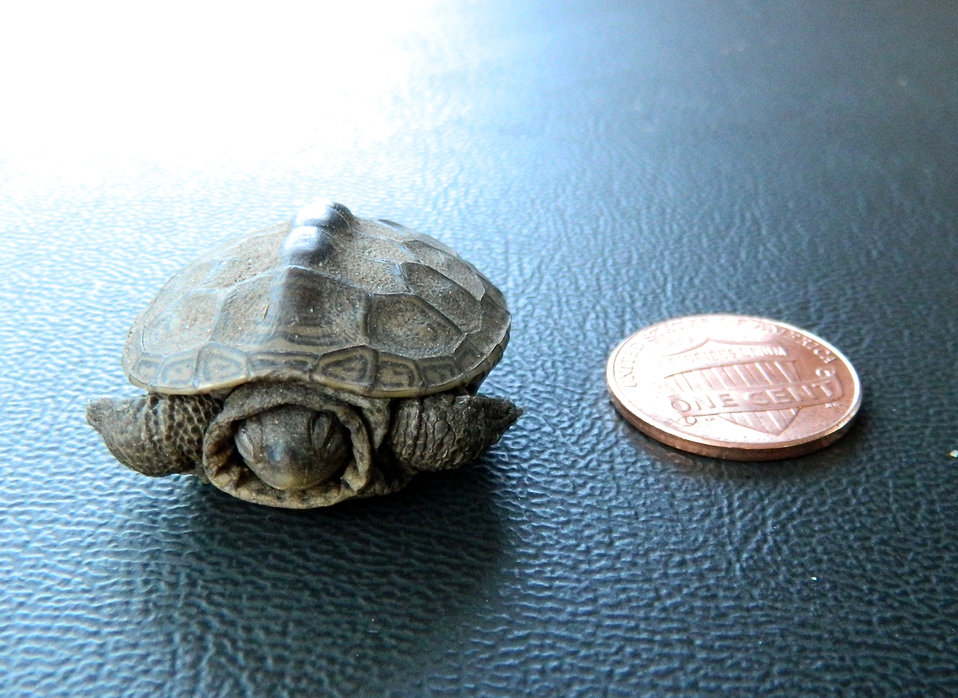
A newly hatched diamondback terrapin (Malaclemys terrapin) rests beside a penny after being rescued from a runway at John F. Kennedy (JFK) International Airport, New York on May 23, 2012. Terrapin young emerge from their nests in spring and scavengers and raptors attracted to the young pose a safety hazard to aircraft. The U.S. Department of Agriculture's (USDA) Animal and Plant Health Inspection Service (APHIS) Wildlife biologists at JFK move the young back to the water and to safety.